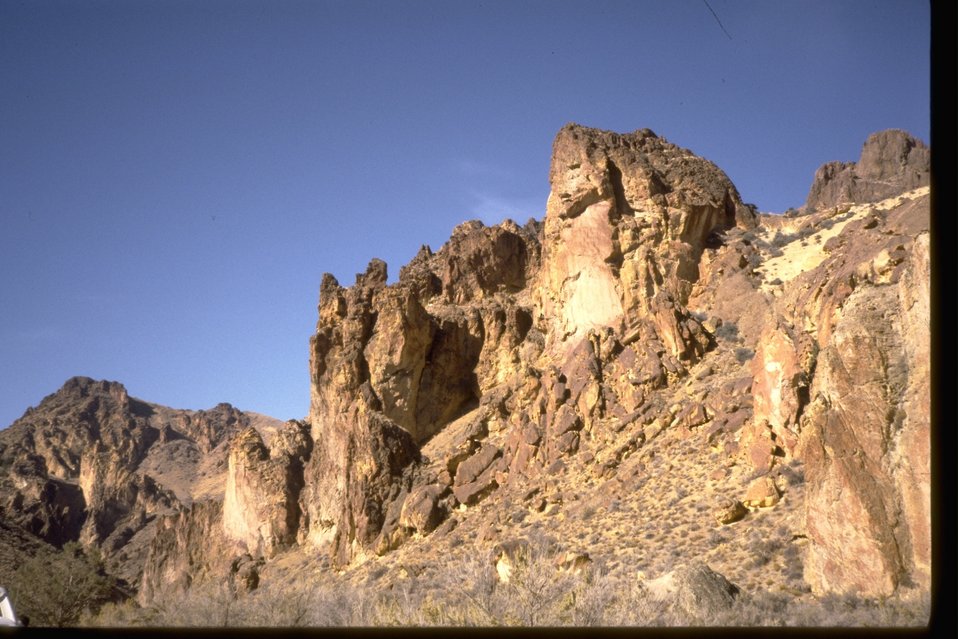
The South Bed of the Honeycombs Wilderness Study Area. OR 3-77A.